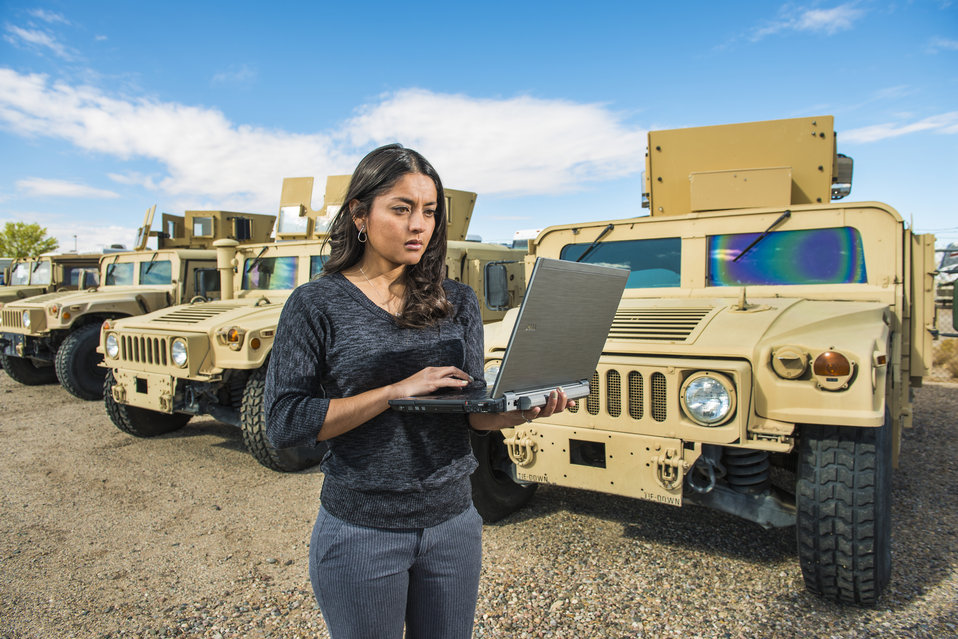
CPAT HELPS THE U.S. ARMY'S PROGRAM EXECUTIVE OFFICE GROUND COMBAT SYSTEMS ANALYZE COUNTLESS WHAT-IF SCENARIOS THAT CAN BE MANIPULATED AS TECHNOLOGY ADVANCES AND THE GLOBAL ENVIRONMENT.

The Capability Portfolio Analysis Tool (CPAT) helps the U.S. Army's Program Executive Office Ground Combat Systems analyze countless what-if scenarios that can be manipulated as technology advances and the global environment, the federal budget, or other factors change. The data can aid in decisions about which combat vehicles to modify or upgrade. The tool won the 2012 Military Operations Research Society's Richard H. Barchi Prize.